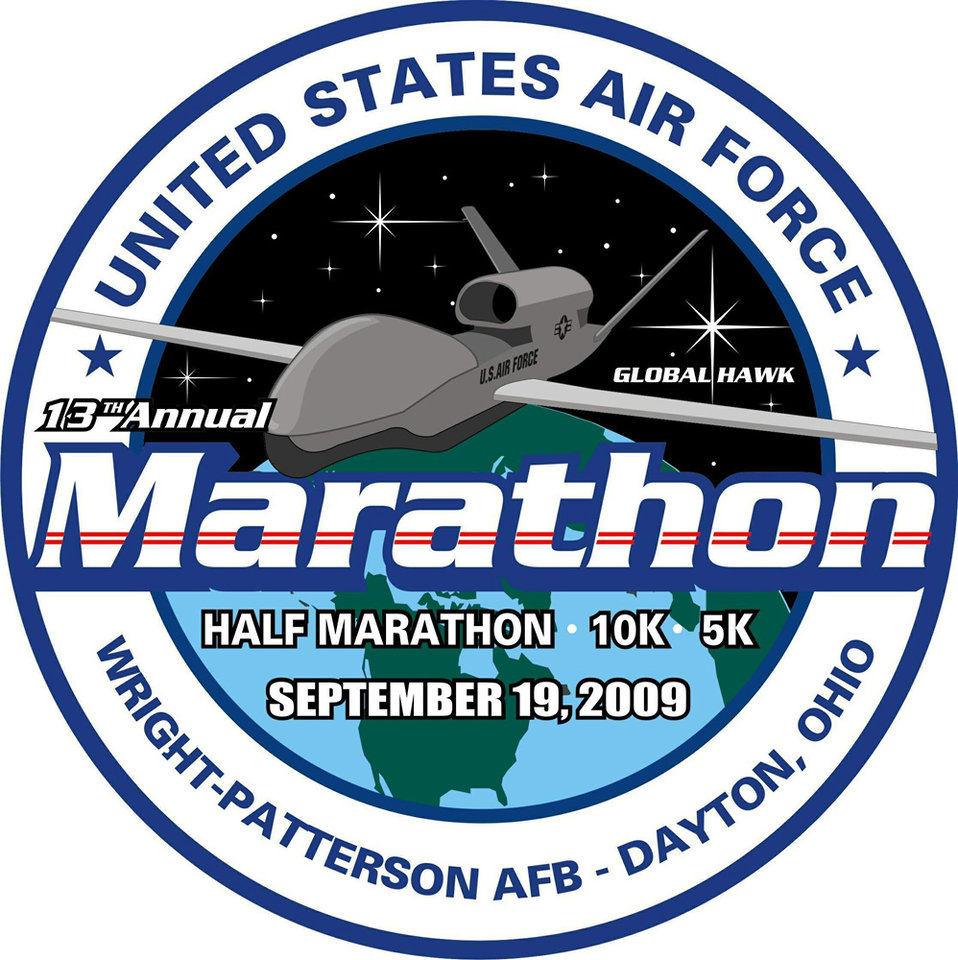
13th Annual Air Force Marathon

The 13th Annual Air Force Marathon is set for Sept. 19 at Wright-Patterson Air Force Base, Ohio.